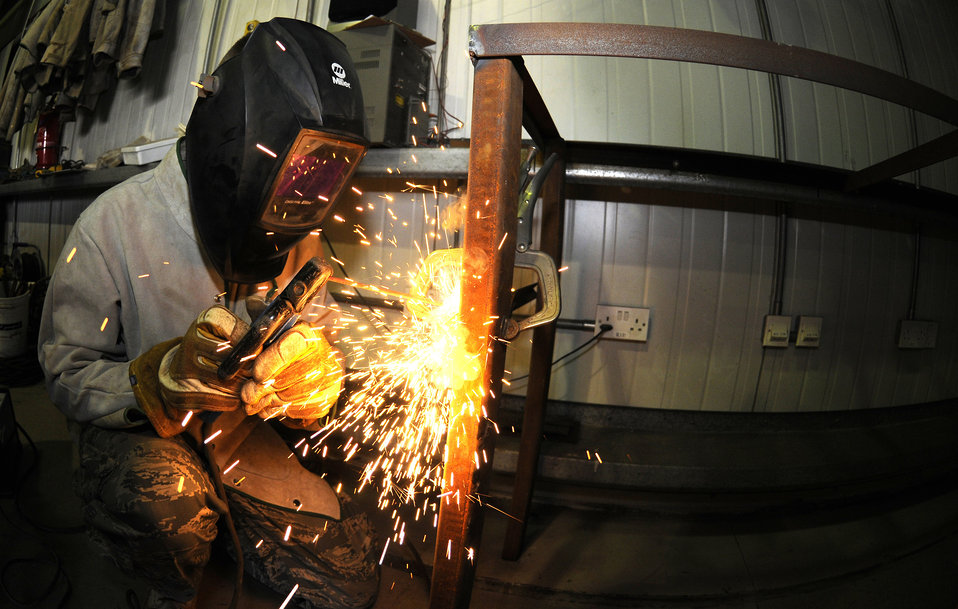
A spark-ling work place

Airman 1st Class Mack Carter uses an arc welder on a brace at a base in Southwest Asia to construct a new work bench. Airman Carter is deployed from the 735th Civil Engineer Squadron at Ramstein Air Base, Germany.